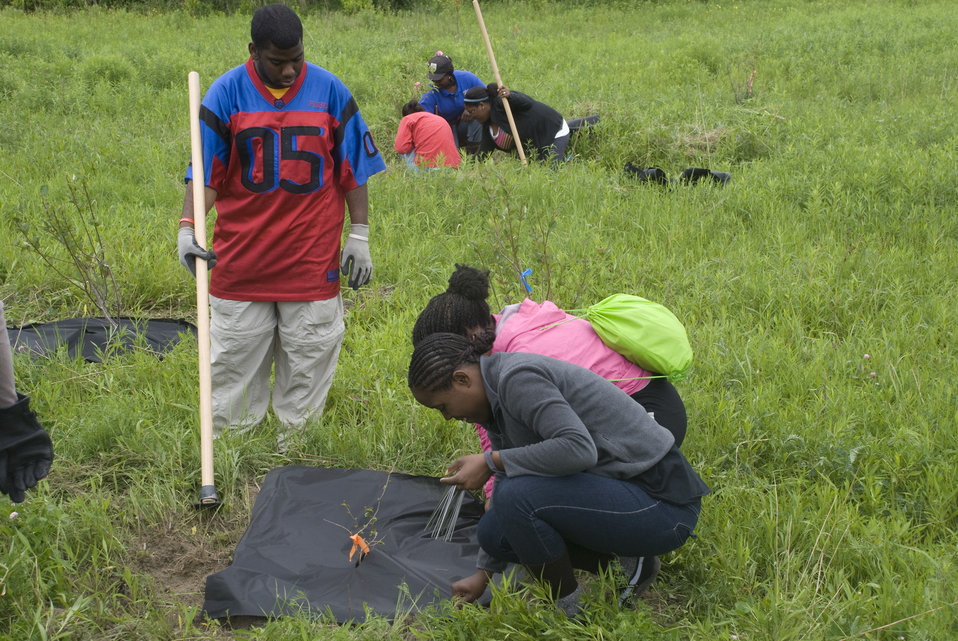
Rachel Carson Natl Wildlife Refuge, ME